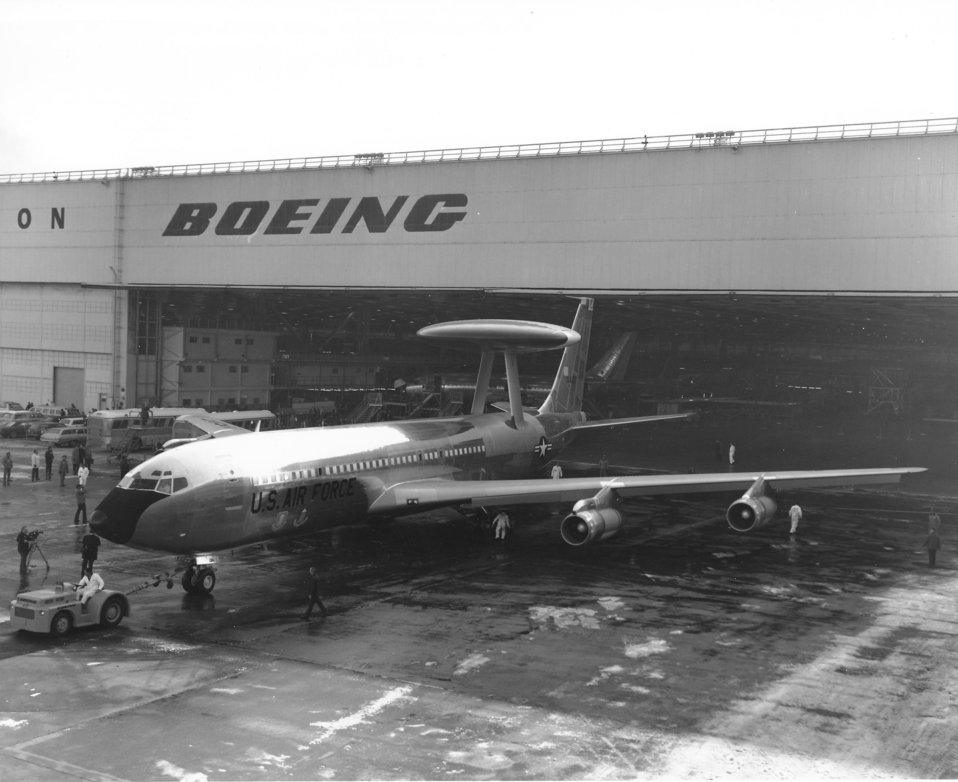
Airmen honor 30 years of AWACS

The first E-3 Sentry rolled out of the Boeing factory on Feb. 1, 1972. Five years later, on Mar. 23. 1977, the E-3 arrived at Tinker Air Force Base, Okla., and began 30 years of continuous air surveillance and command and control. The 552nd Air Control Wing celebrated the E-3's 30th anniversary June 29 to July 1, inviting past and present E-3 Airmen to gather, swap stories and learn about the newest upgrades for the E-3.